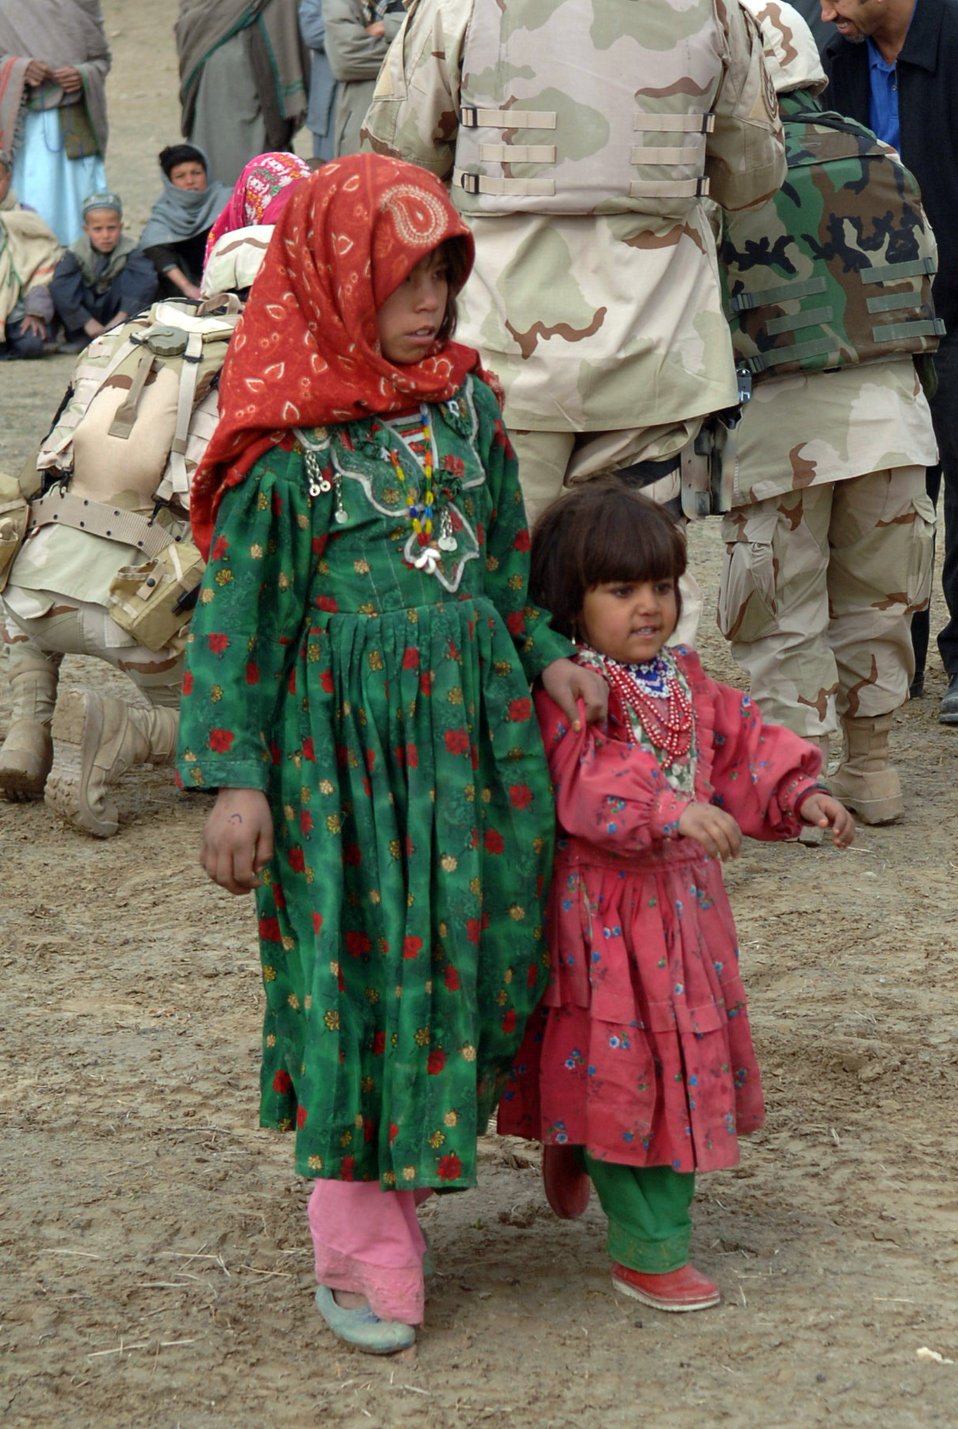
Airmen reach out

Young girls walk to receive bags of clothes and assorted goods in Parwan Province, Afghanistan. More than 400 bags were recently handed out to the Afghans by Airmen at Bagram Air Base.